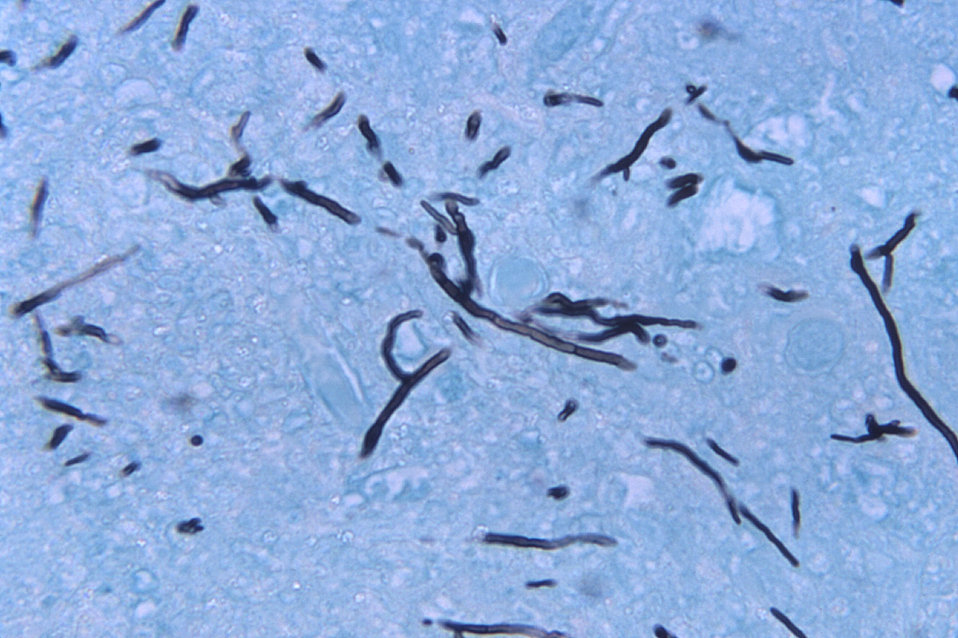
Under a magnification of 500X, this photomicrograph revealed some of the cytoarchitectural morphology associated with a tissue reaction due to the infiltration of Ochroconis gallopavum, formerly Dactylaria gallopava, fungal organisms.Note the branching septate hyphae, as well as the conidiophores, which are topped with fungal spores, or conidia, also known as mitospores, for they are born out of the process of mitosis, and are therefore, haploid when they reach maturity. This slide culture was cultivated on potato-dextrose agar for 7 days.